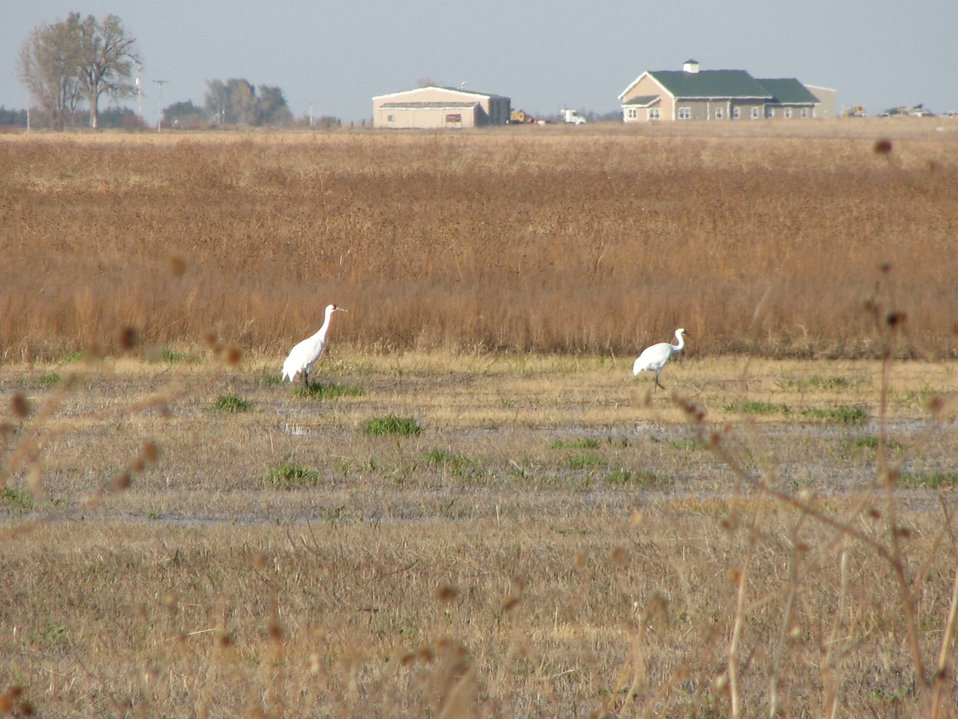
Whooping cranes on Funk WPA, NE

Whooping cranes (Grus americana) using Funk Waterfowl Production Area, Phelps Co. NE.

Taken: October 31, 2010